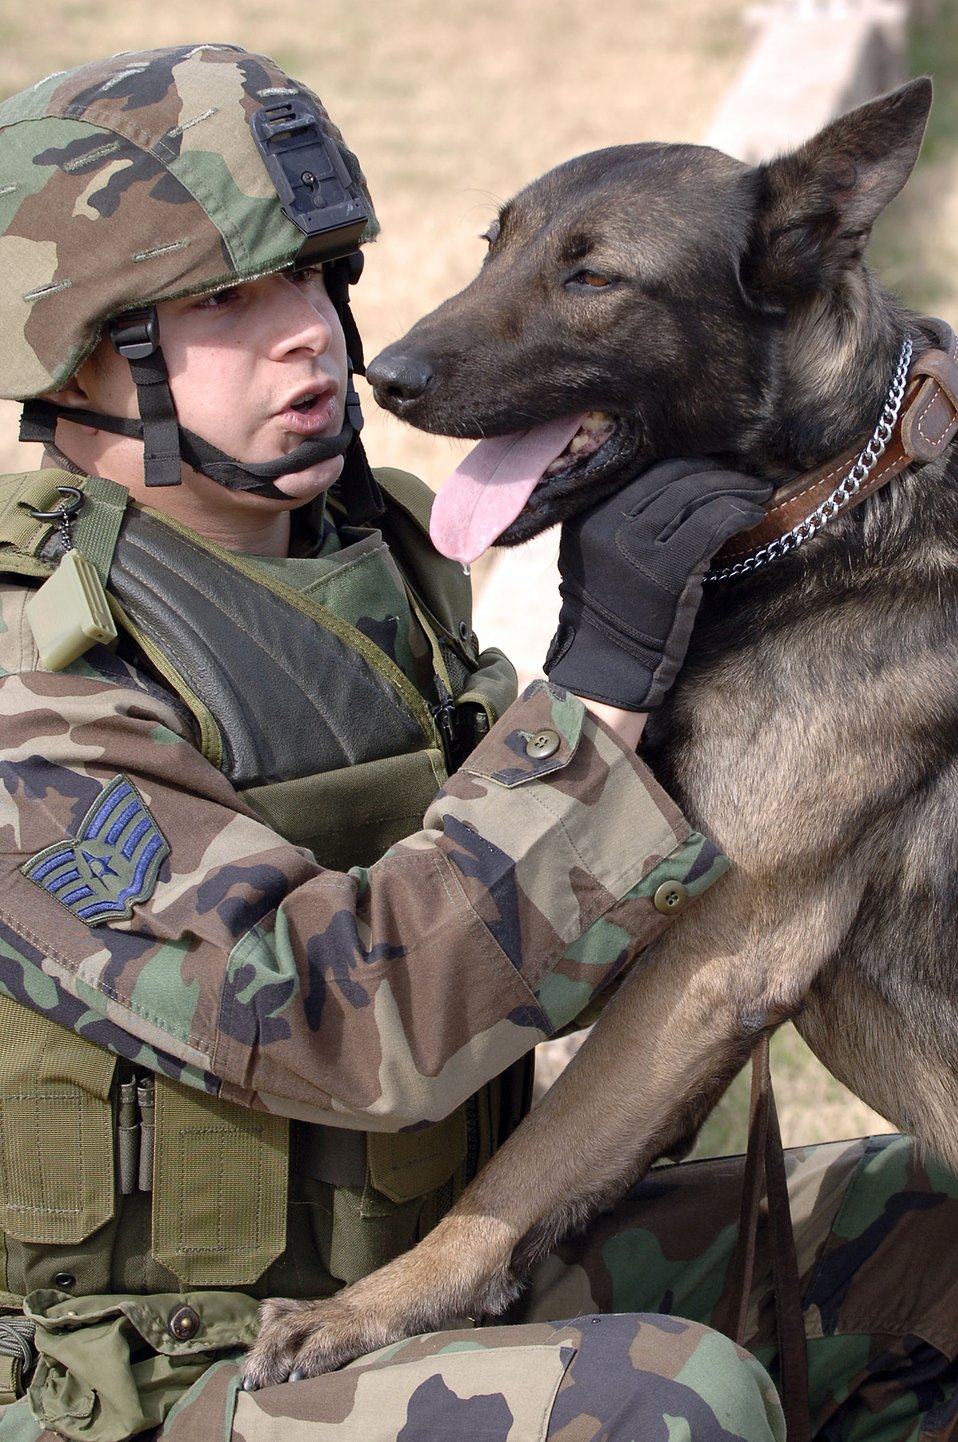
Expeditionary Combat Skills Training Course

BARKSDALE AIR FORCE BASE, La. (AFPN) -- Staff Sgt. Jessie Mendez and his military working dog, Robby, wait to take part in the base's expeditionary combat skills training course. The weekly course, which ends this month, prepares Airmen for deployment. Military working dogs are now part of the course to help provide a more realistic training experience. Sergeant Mendez and Robby are both with the 2nd Security Forces Squadron.